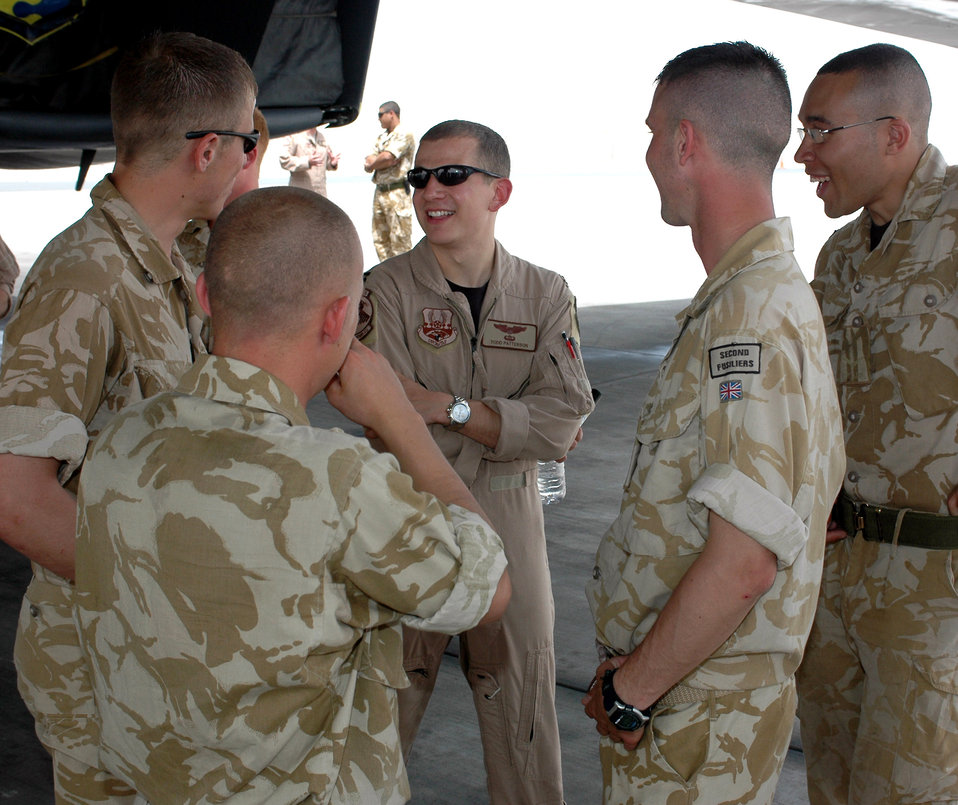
Fusilier Company gets 'royal treatment'

Capt. Todd Patterson, a B-1B Lancer pilot with the 34th Expeditionary Bomb Squadron, chats with British infantrymen from the Royal Regiment of Fusiliers during a tour of their deployed location May 2. The bomber aircrews were called upon daily to provide close-air support for the fusiliers through bombing and shows of force and presence.